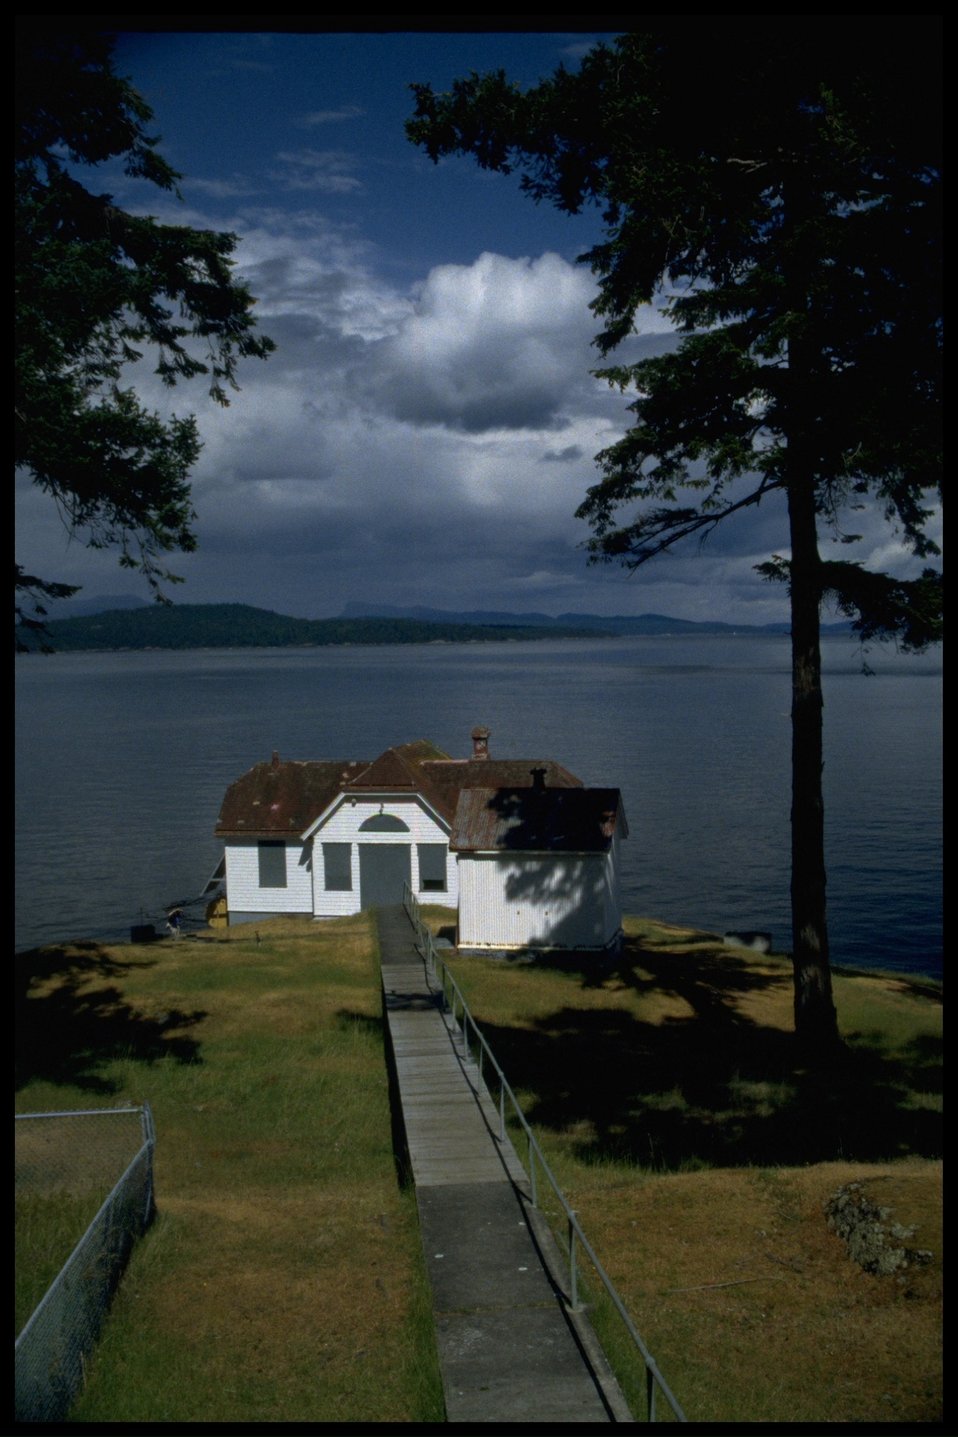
The view of the light station from the living quarters at Turn Point.